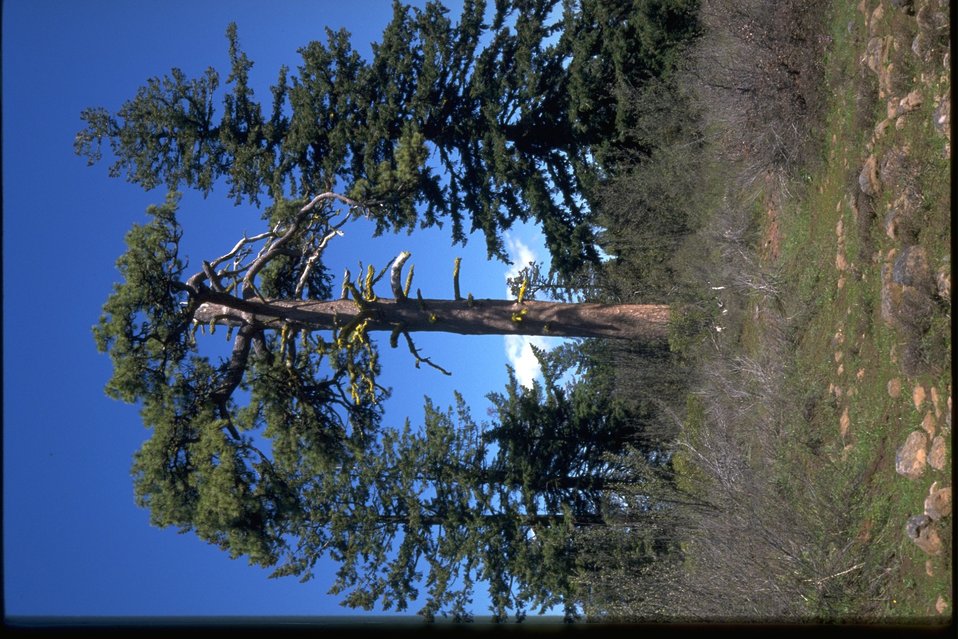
Jenny Creek LSR. A tree island in a dry meadow area on the north slope of Chinquapin Mountain.